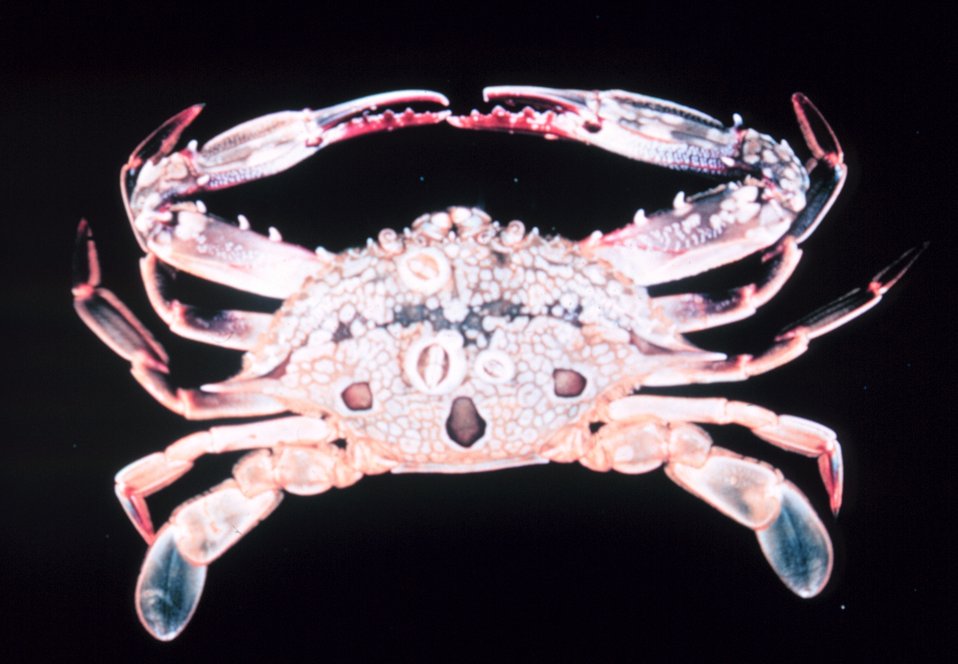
Crab